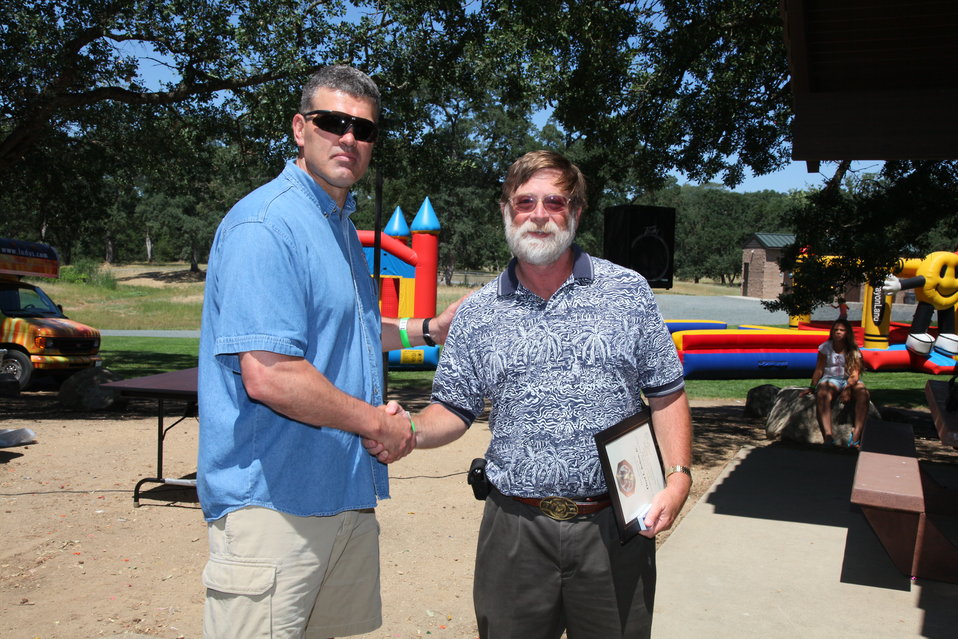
2011 Annual Picnic